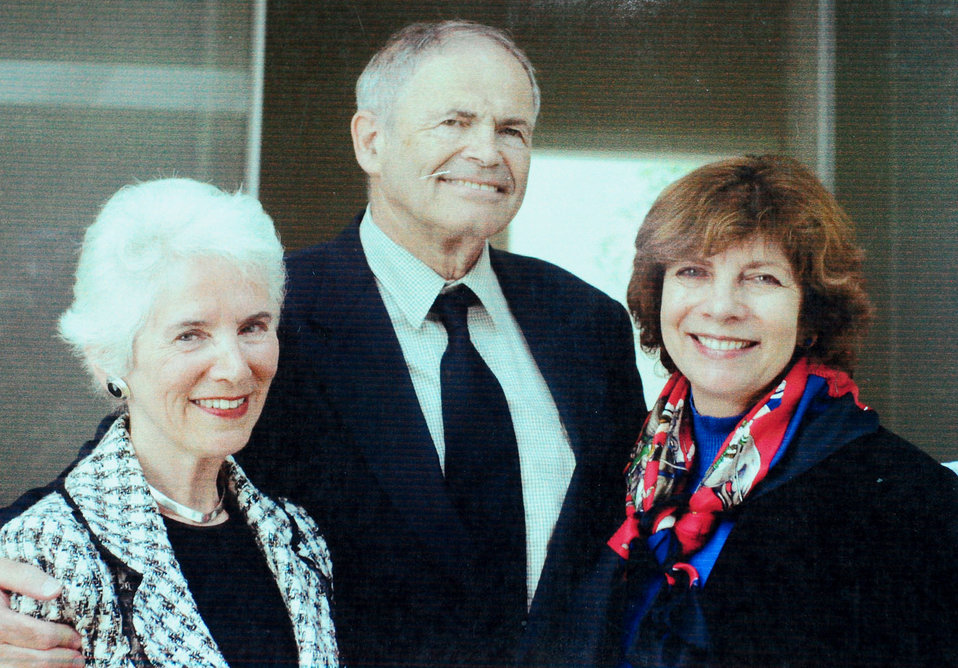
Holocaust survivor shares her mother's story

This copy of a photo is of the three